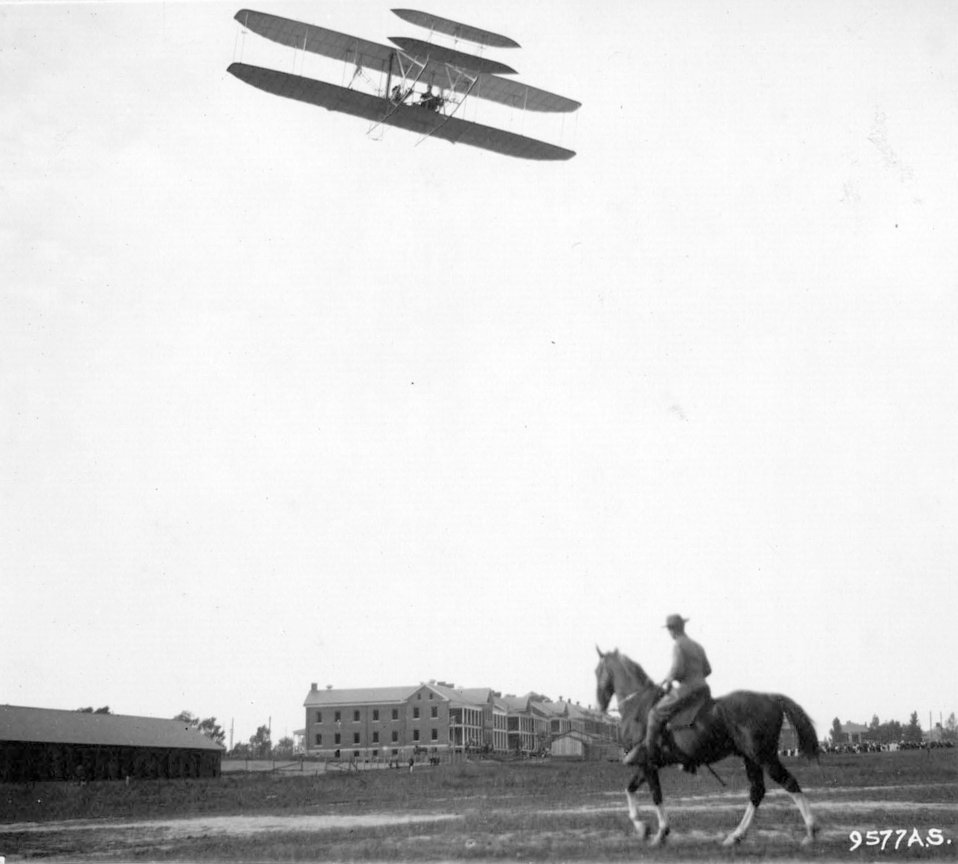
Orville Wright

EARLY YEARS -- Orville Wright at Fort Myer, 9/9/08. 1 hour, 2 1/2 minute flight.